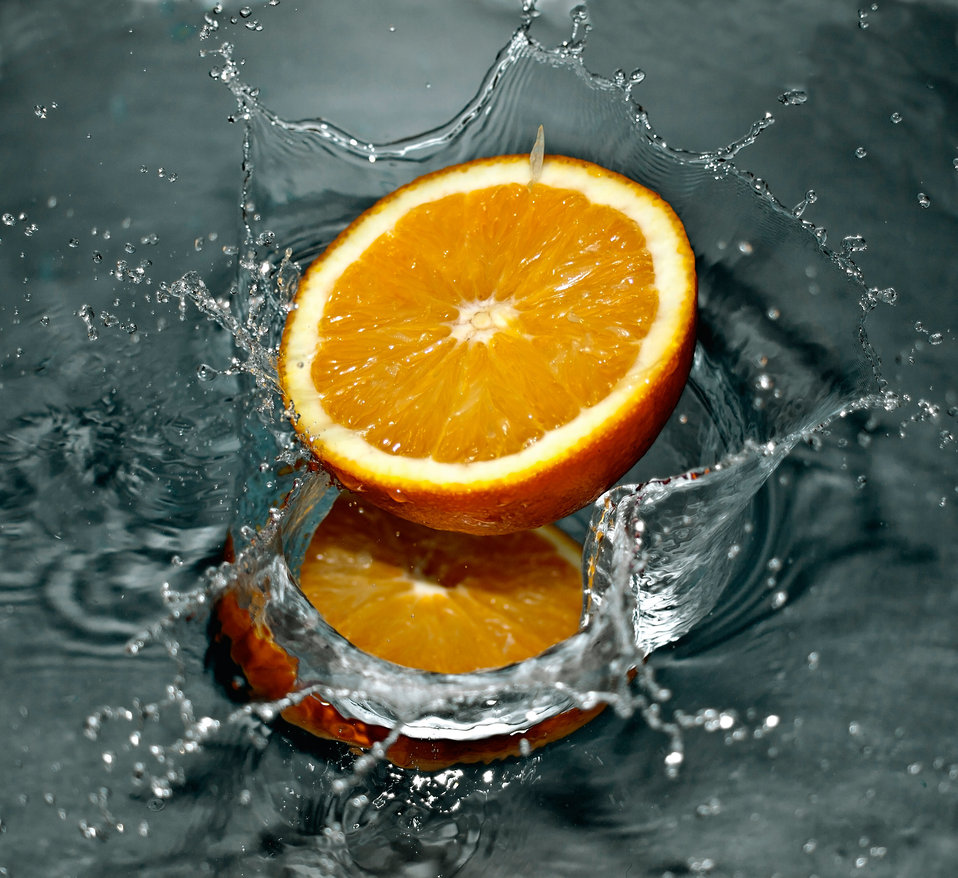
Splash

Orange halves falling into water bowl.